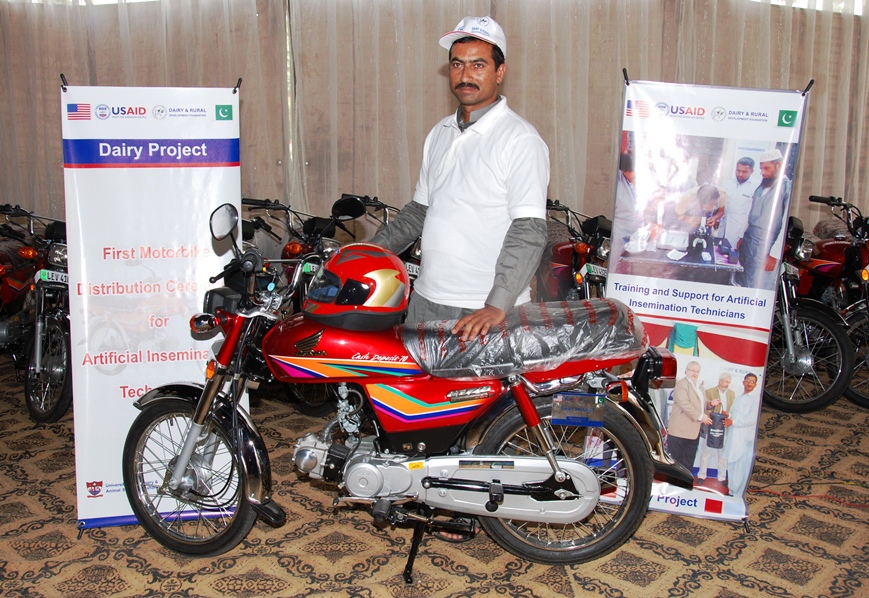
A successfull AI technician with his new motorcycle awarded by USAID Dairy Project 2